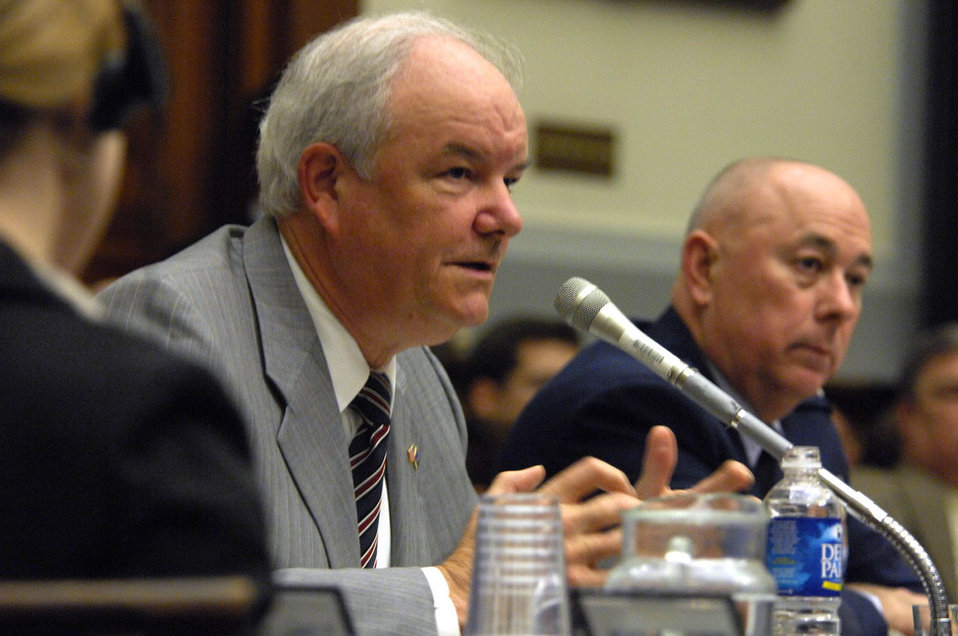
Air Force releases 2007 posture statement

Secretary of the Air Force Michael W. Wynne and Air Force Chief of Staff Gen. T. Michael Moseley testify before a House committee on Capitol Hill Feb. 28 about the need for more money to upgrade the Air Force's aging fleet of tanker aircraft.